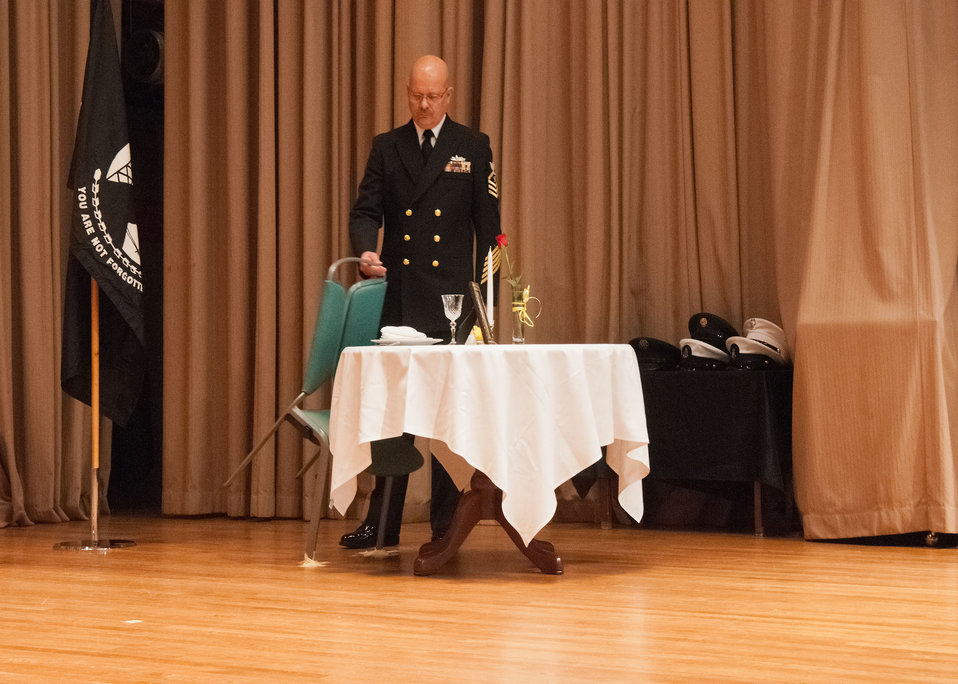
Classified National Security Programs, Office of Homeland Security and Emergency Coordination (OHSEC) U.S. Department of Agriculture U.S. Navy Chief Keith T. McElfresh prepares the POW/MIA Table at the U.S. Department of Agriculture Veterans Day Observance: Honoring All Who Served Wednesday, Nov. 7, 2012 in Washington, D.C. The POW/MIA Ceremony is an opportunity to remember those gallant individuals who fought and died for our country and paid an incredible price to help preserve the freedoms we enjoy today.